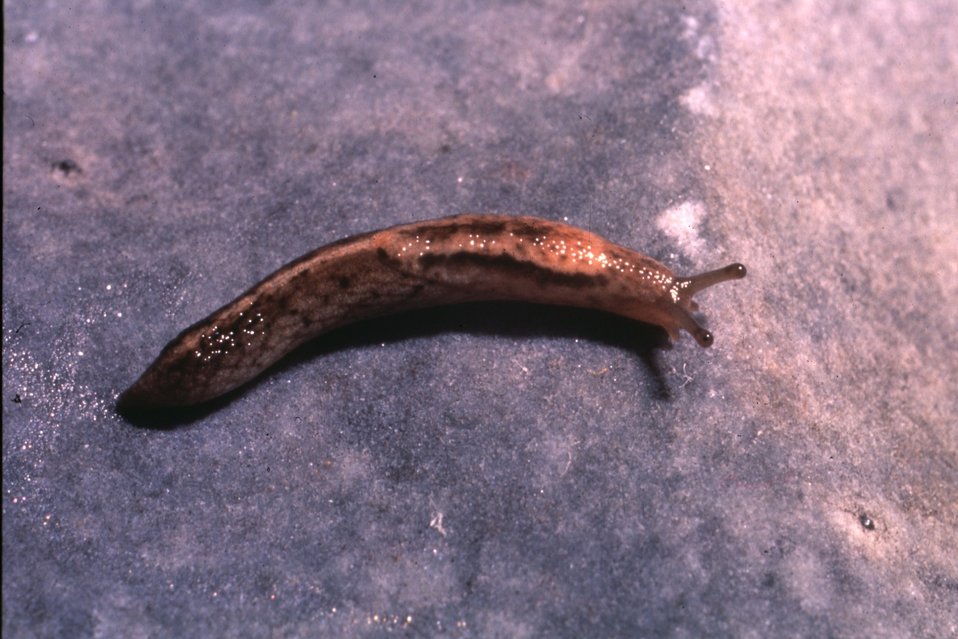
Reticulate tail-dropper (Prophysaon andersoni) Note: not a Survey & Manage species.